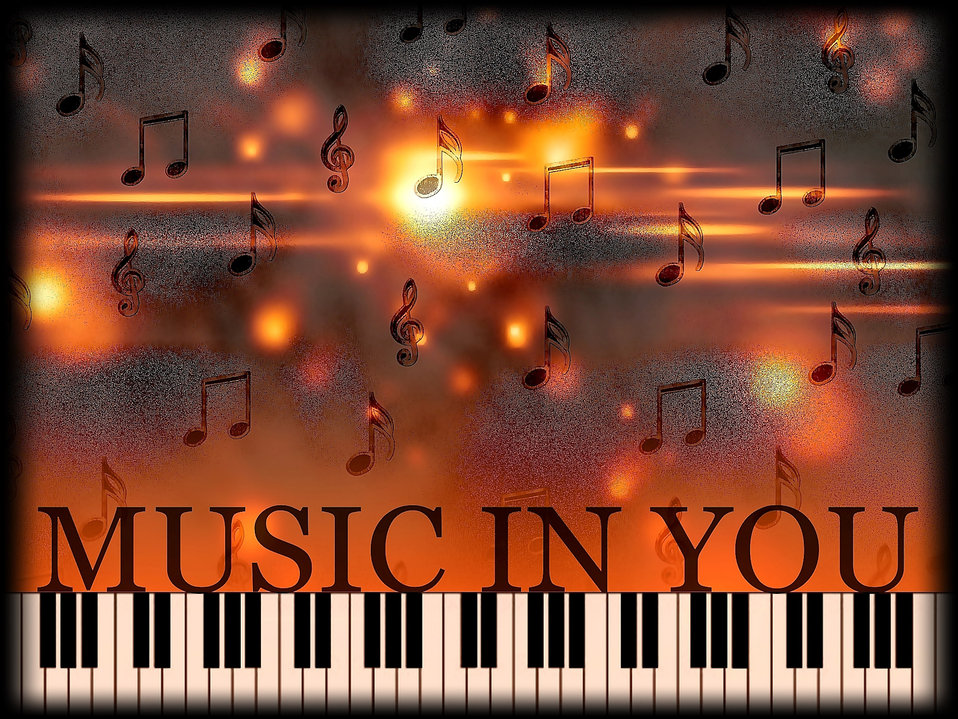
Background 350

Background music.